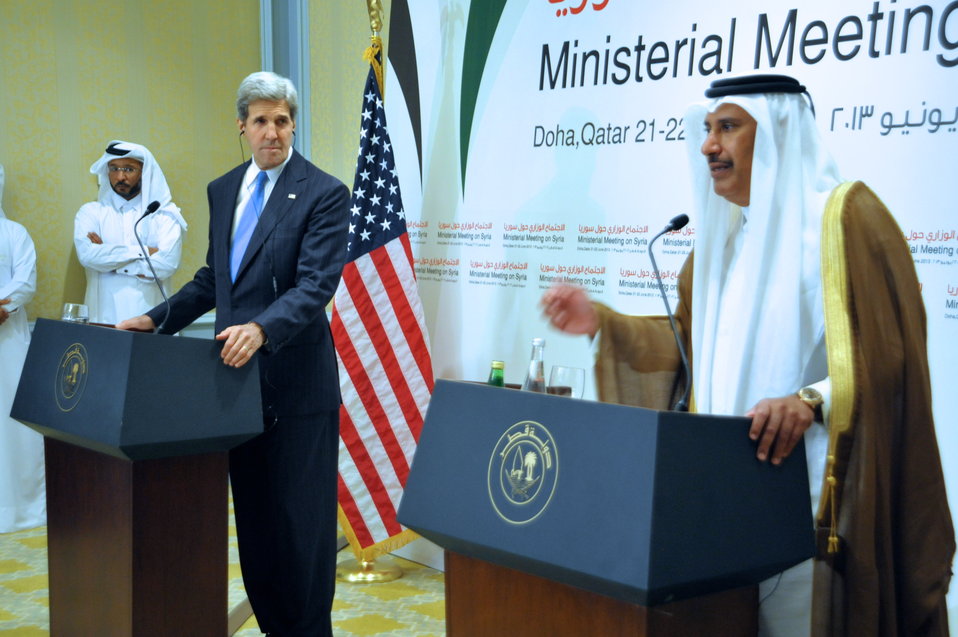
Secretary Kerry Addresses Reporters With Qatari Prime Minister and Foreign Minister Sheikh Hamad bin Jassim Al Thani

U.S. Secretary of State John Kerry addresses reporters with Qatari Prime Minister and Foreign Minister Sheikh Hamad bin Jassim Al Thani after a meeting of the London Eleven in Doha, Qatar, on June 22, 2013.